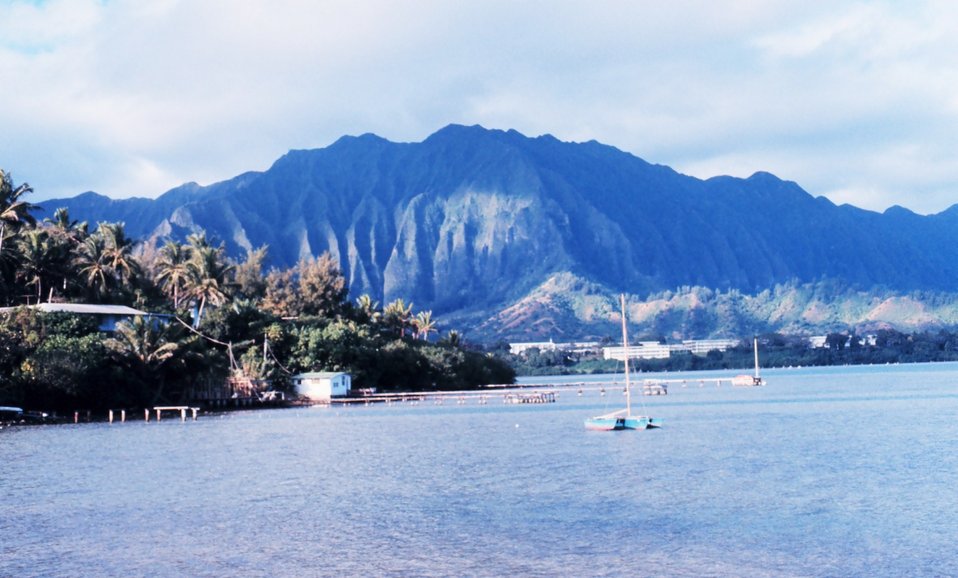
Kaneohe Bay -trimaran tied up at the University of Hawaii Institute of Marine Biology.